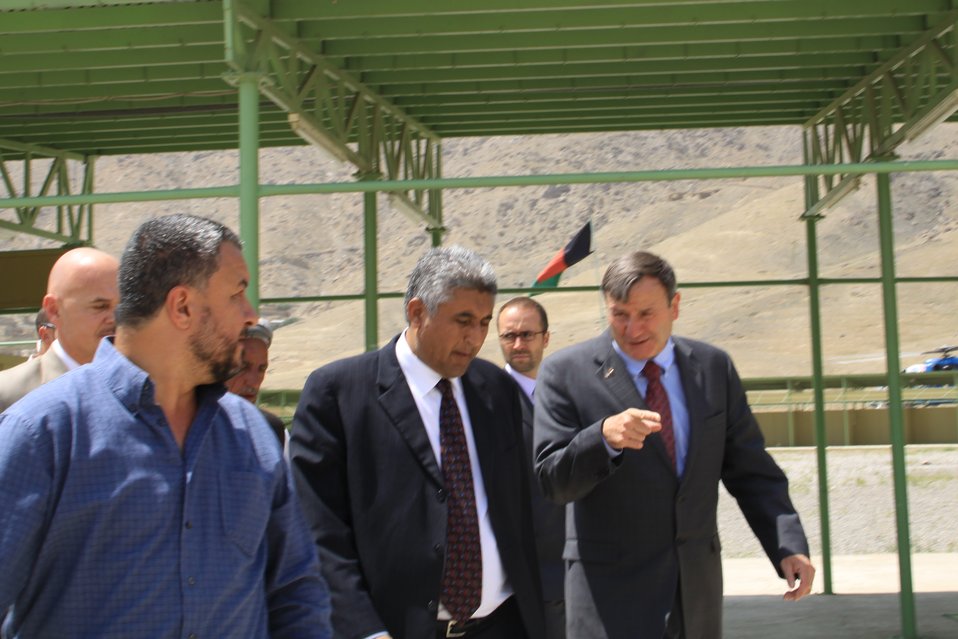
Badam Bagh Farm